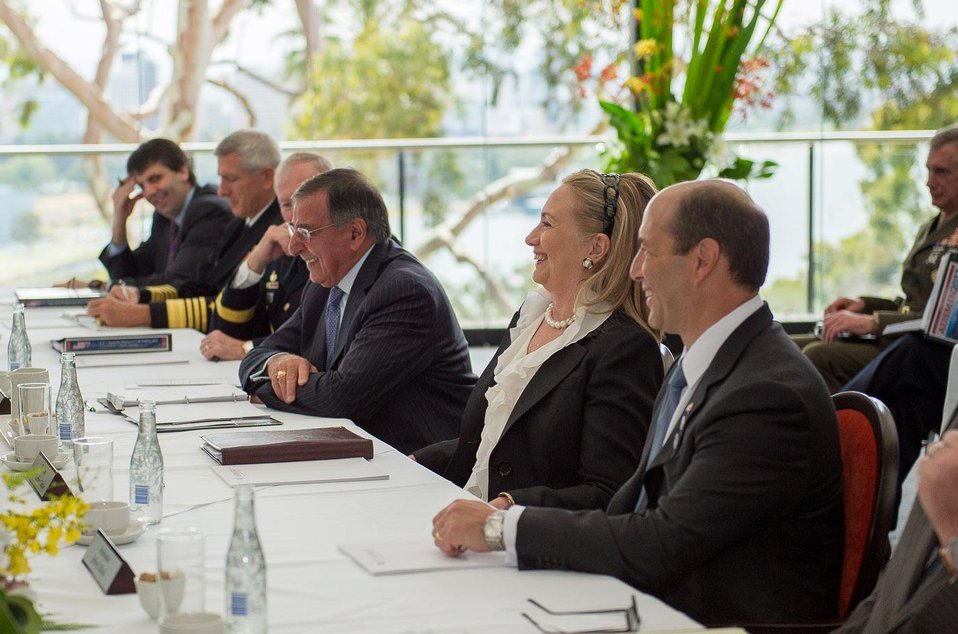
Ambassador Bleich, Secretaries Clinton and Panetta, and Vice Admiral Harris Participate in a Working Lunch

From front to back, U.S. Ambassador to Australia Jeff Bleich, U.S. Secretary of State Hillary Rodham Clinton, U.S. Secretary of Defense Leon Panetta, and Vice Admiral Harry B. Harris, Jr. participate in the AUSMIN working lunch in Perth, Australia, November 14, 2012. [U.S. Embassy in Canberra, Australia photo by Travis Longmore/ Public Domain]